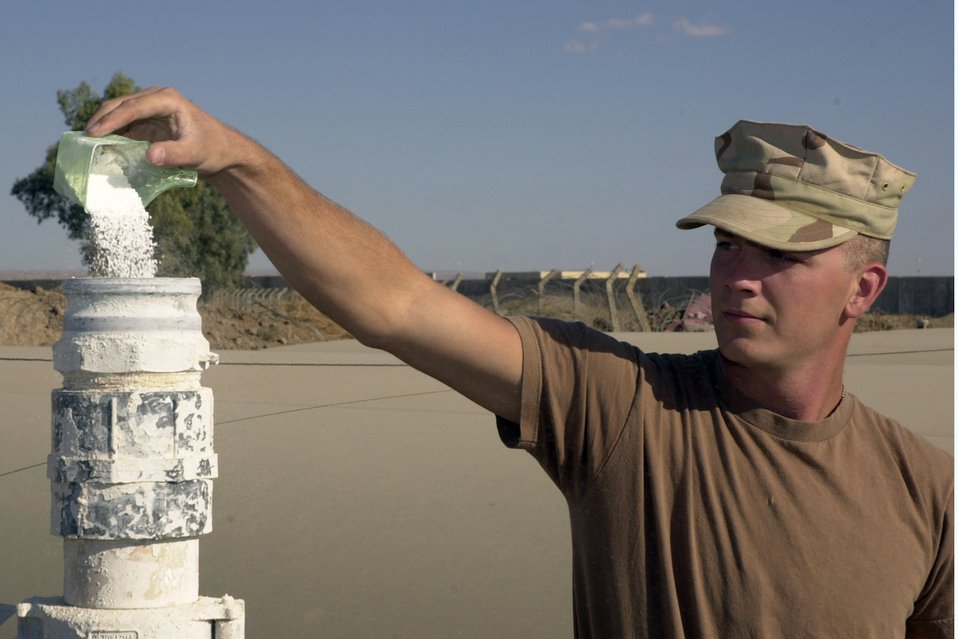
Deployed water safety

KIRKUK AIR BASE, Iraq (AFPN) -- Senior Airman Randy Plantenberg adds chlorine to a distribution valve that will mix it into water storage bladders. Airman Plantenberg is a utilities journeyman with the 506th Expeditionary Civil Engineer Squadron.